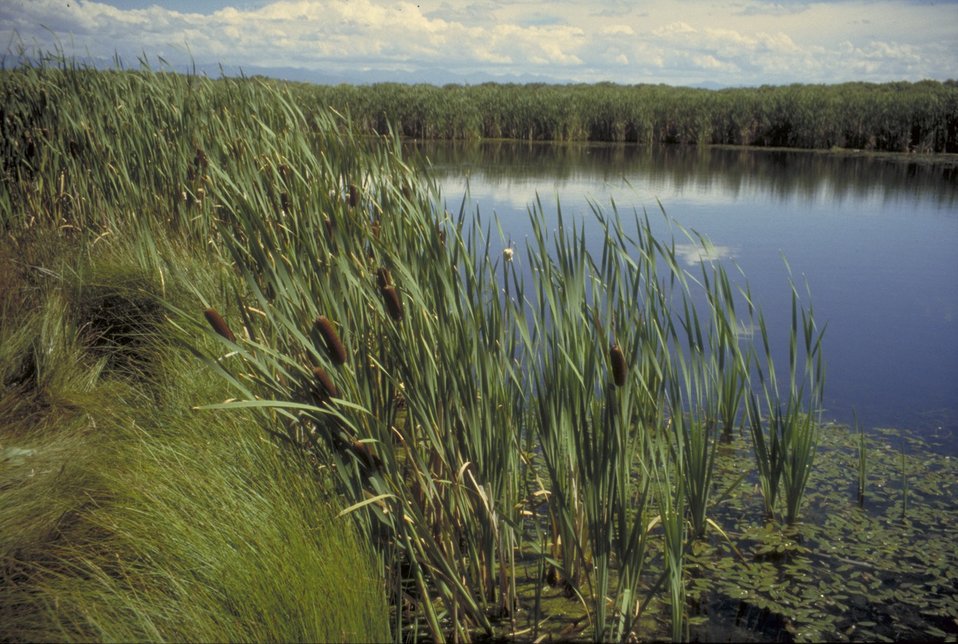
Cattails at Blanca Wetlands near Alamosa, Colorado.